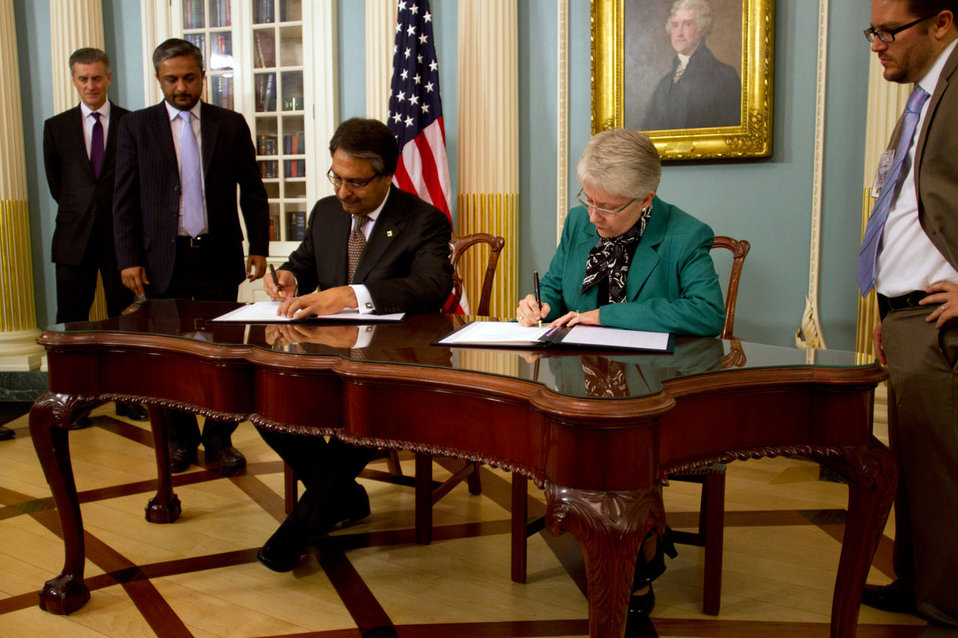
Assistant Secretary Jones and Pakistani Foreign Secretary Jilani Sign a Science and Technology Agreement Extension

Assistant Secretary for Oceans and International Environmental and Scientific Affairs (OES) Dr. Kerri-Ann Jones and Pakistani Foreign Secretary Jalil Abbas Jilani sign a five-year extension of the U.S.-Pakistan Science and Technology Cooperation Agreement at the U.S. Department of State in Washington, D.C., on October 23, 2103.